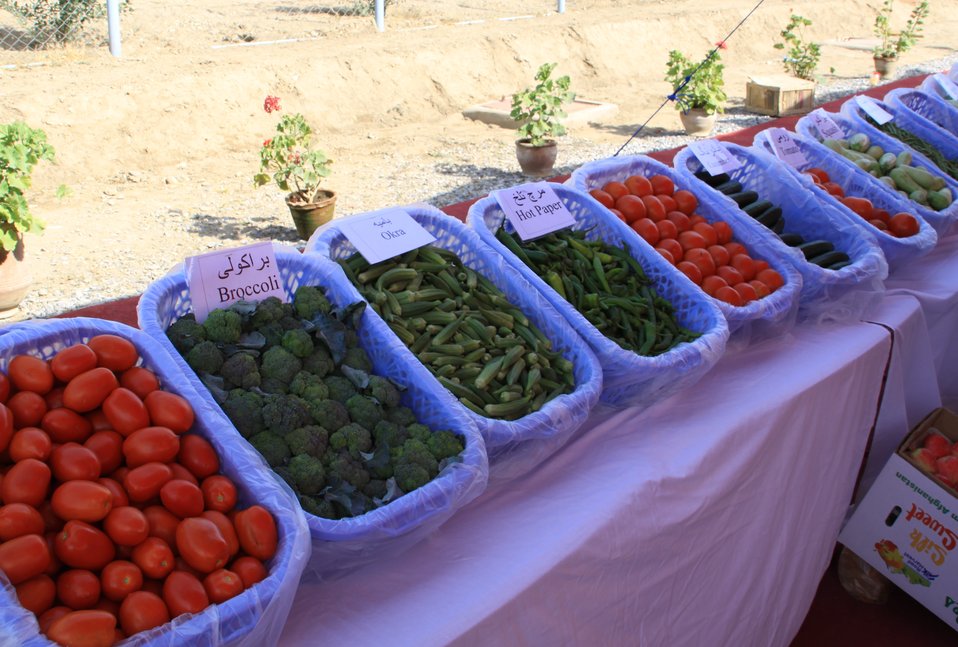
Badam Bagh Farm